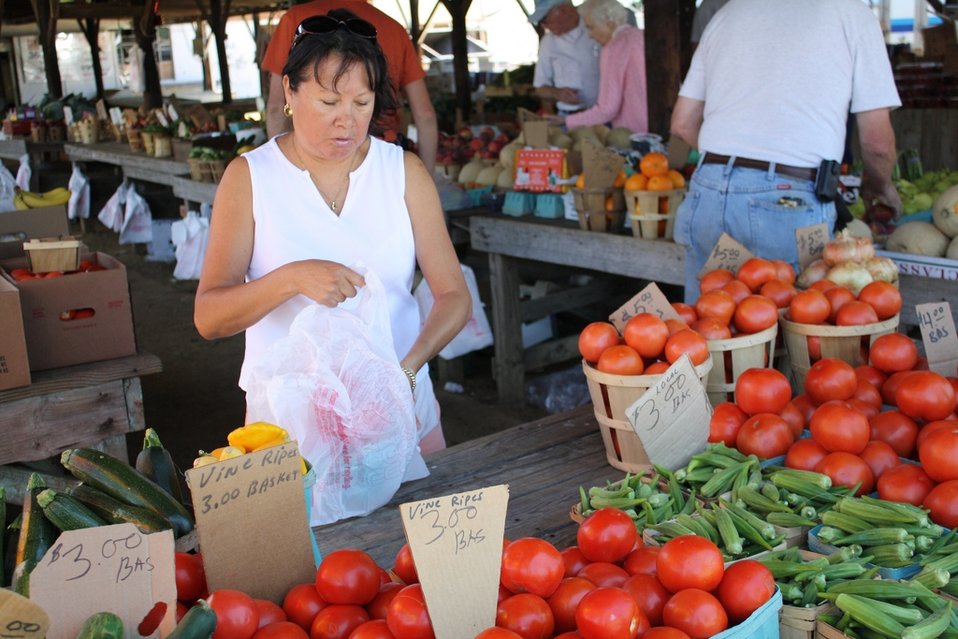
fm1

A vendor places tomatoes into a plastic bag for a customer at a Maryland farmers market on August 10, 2012. Many beginning producers use farmers markets as the gateway to direct marketing opportunities. The U.S. Department of Agriculture’s (USDA) Farmers Market Promotion Program (FMPP) assists local communities to reinvigorate and reinvent their farmers market. FMPP is a competitive grant program administered by USDA’s Agricultural Marketing Service (AMS) that provides funds to help establish, expand, and promote farmers markets, roadside stands, community-supported agriculture programs, and other direct-to-consumer marketing opportunities.